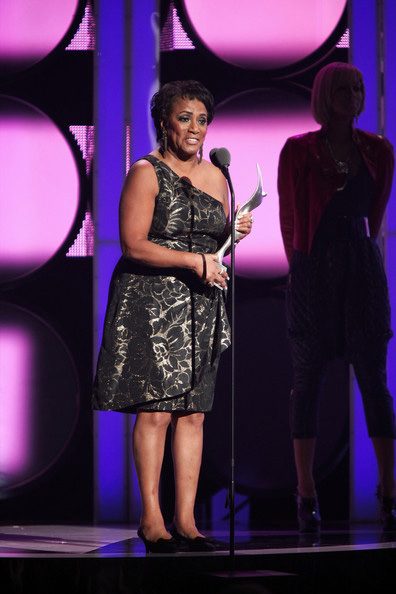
Maj. Gen. Marcelite Harris, the Air Force's first African-American female general.